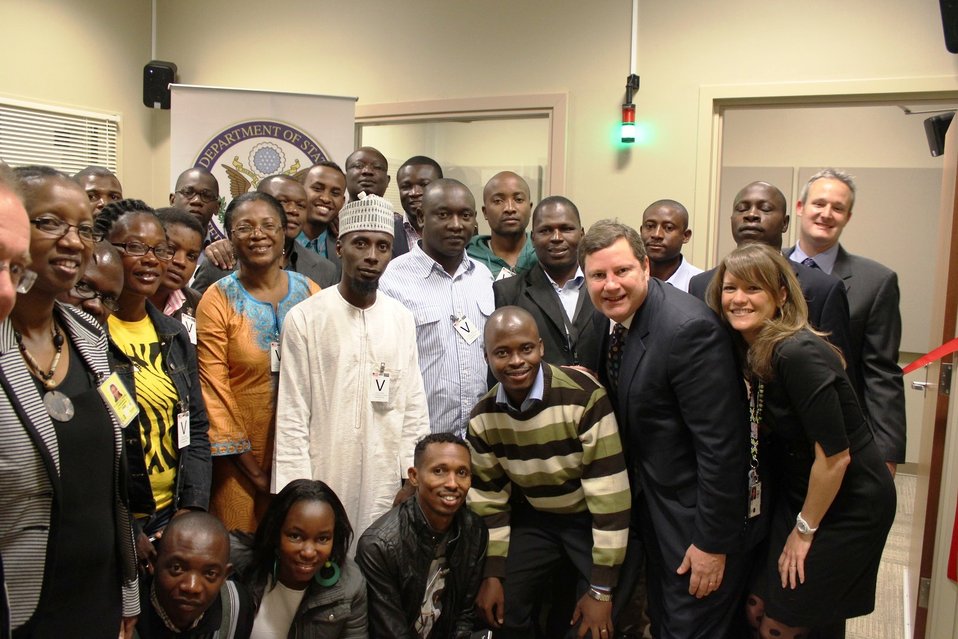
Assistant Secretary Hammer at the Launch of the New Location of the Africa Regional Media Hub

Assistant Secretary of State for Public Affairs Mike Hammer poses for a photo at the launch of the new location of the Africa Regional Media Hub in Johannesburg, South Africa, November 2, 2012.